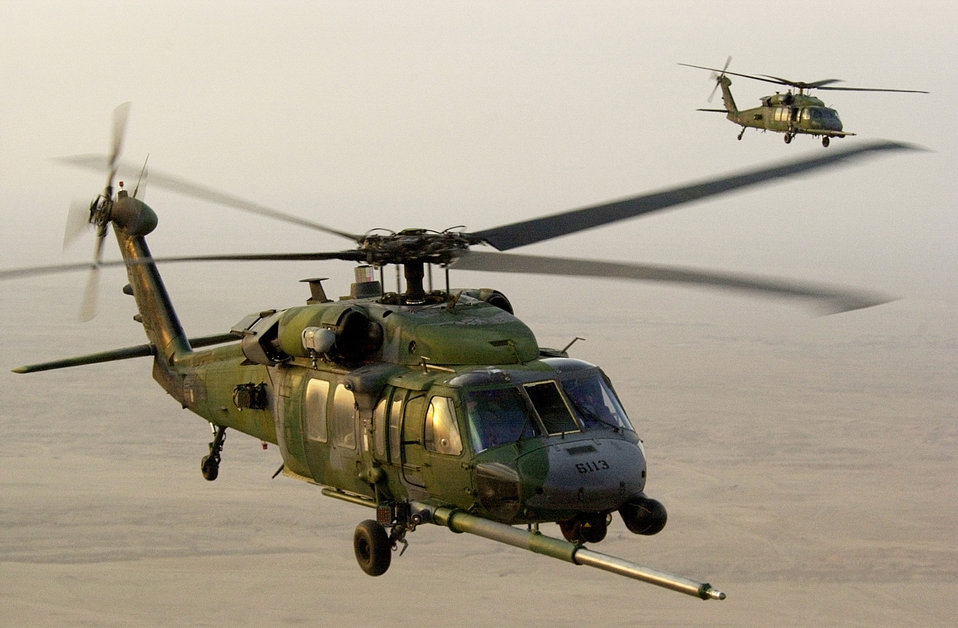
Pave Hawks pair

OPERATION SOUTHERN WATCH -- Two HH-60G Pave Hawks fly in formation during a training mission in the area of responsibility at an operating location in support of Operation Southern Watch. Pave Hawk rescue equipment includes a hoist capable of lifting a 600-pound load from a hover height of 200 feet, and a personnel locating system.